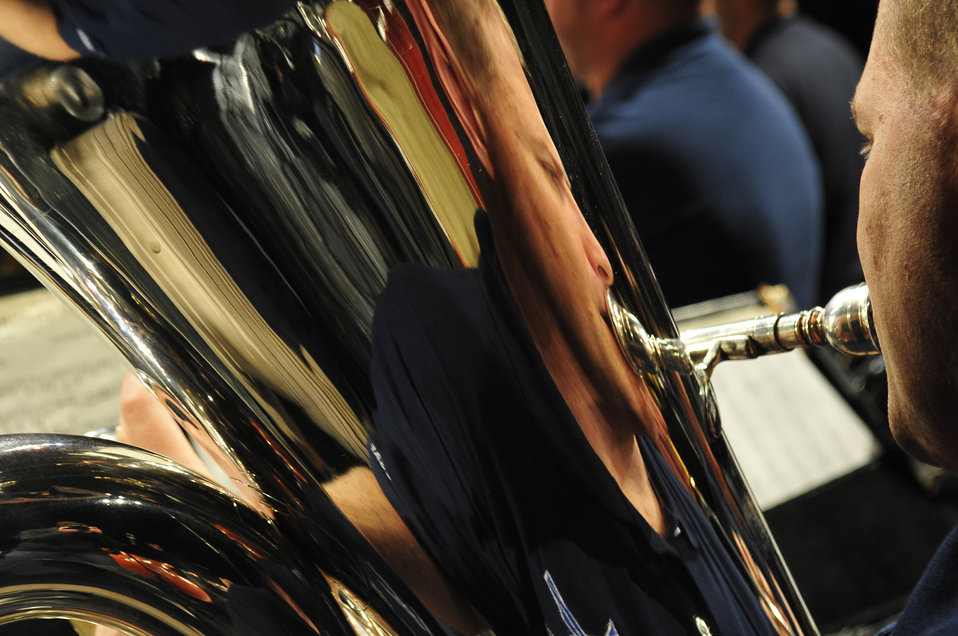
USAFE Concert Band on tour

Tech. Sgt. David Hartung plays during sound checks in preparation for a performance of the United States Air Forces in Europe Band May 4, 2011, in Bratislava, Slovakia. The USAFE concert band is on tour through three countries, performing at seven locations as part of a building partnerships capacity and community outreach initiative. Sergeant Hartung is tuba player and the training manager for the USAFE Band.